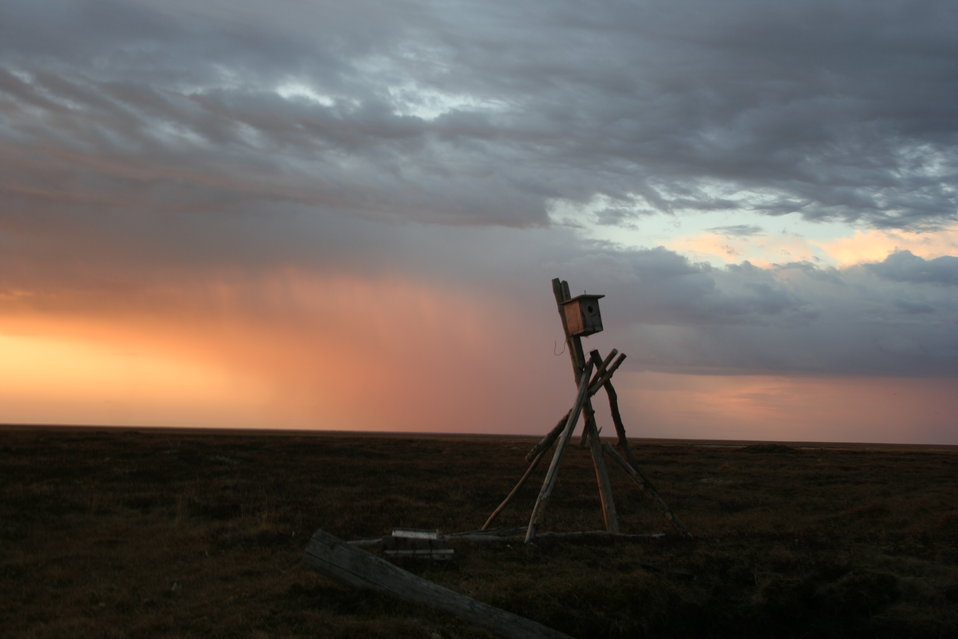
Beautiful sunset

One of the perks of being at a field camp is the beautiful sunsets.

USFWS Yukon Delta NWR